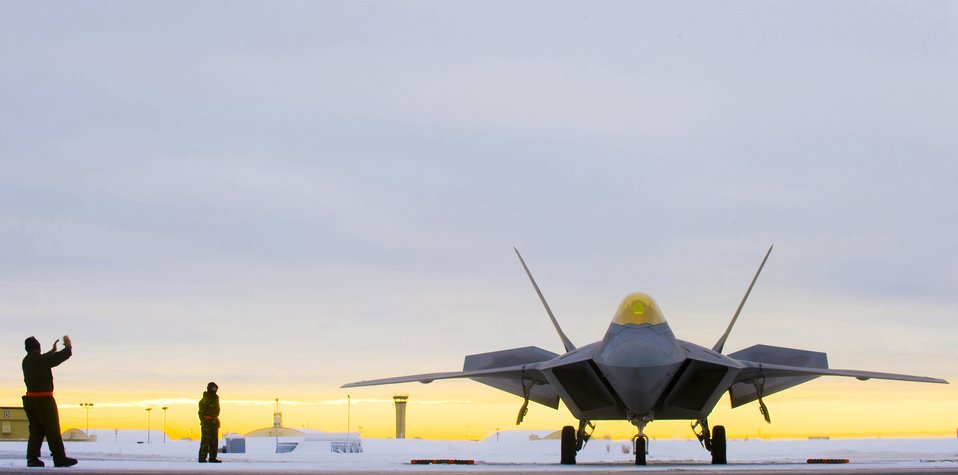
Alaska's F-22s prepare for IOC

A 90th Aircraft Maintenance Unit crew chief signal an F-22A Raptor laden with concrete bombs to begin its departure for a training mission. For the first time at Elmendorf Air Force Base, Alaska, a mock bomb drop over Alaska, Jan. 16, provides integral training for both fighters and maintainers in preparation to declare its initial operation capabilities.